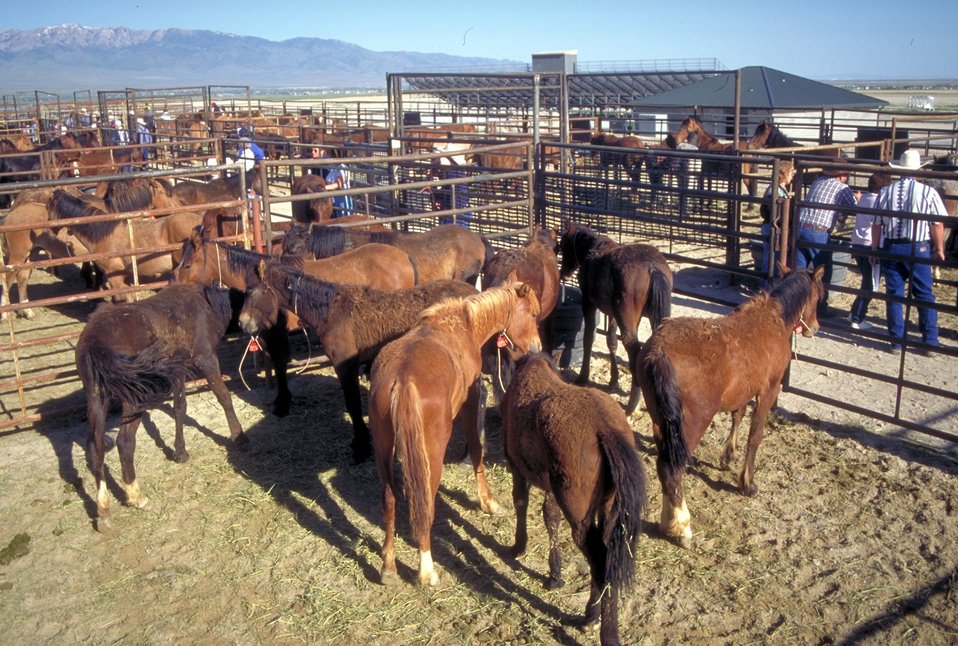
Utah Annual Wild Horse Festival